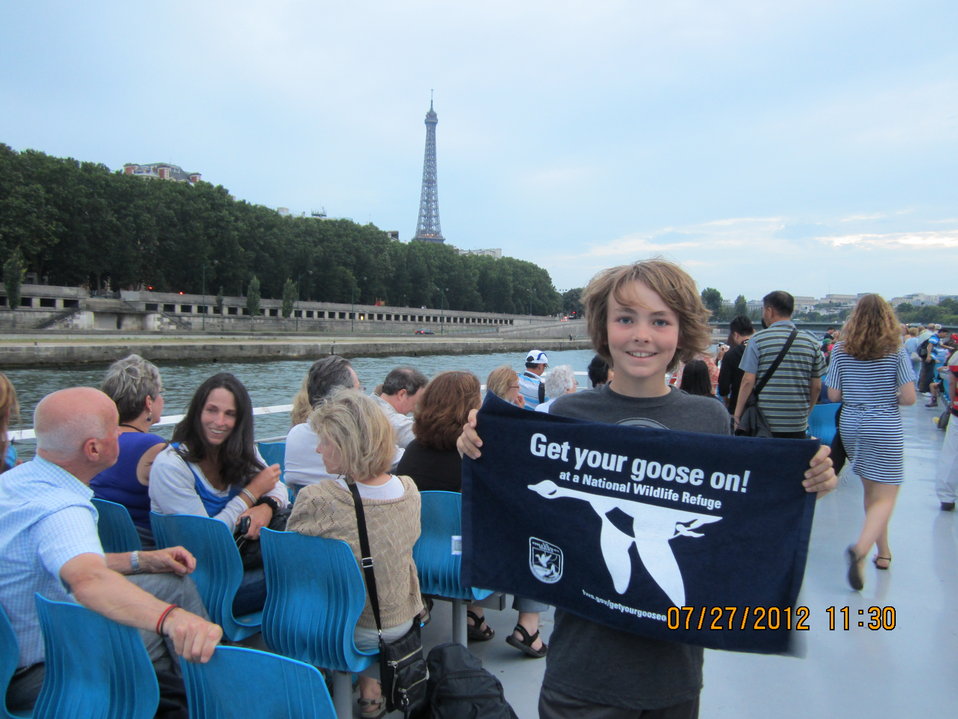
Get Your Goose On! - Eiffel Tower Style!